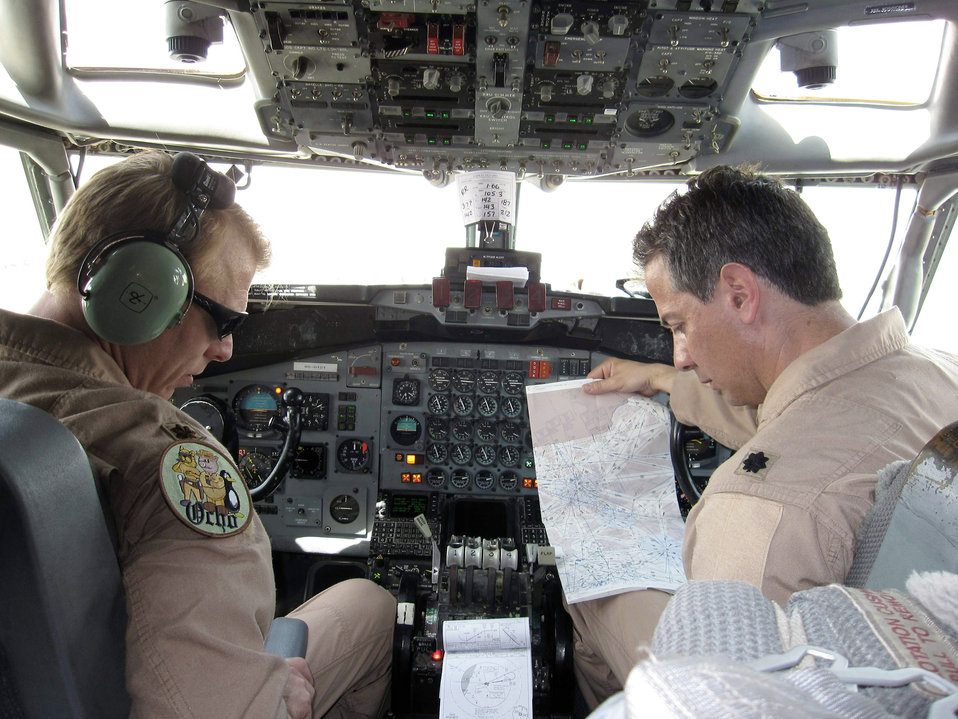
Agency staff provides aeronautical products to military pilots, aviators

Two Georgia Air National Guard pilots from the 7th Expeditionary Airborne Command and Control Squadron review a National Geospatial-Intelligence Agency flight information publication prior to launching on a recent combat sortie in the U.S. Central Command area of responsibility.